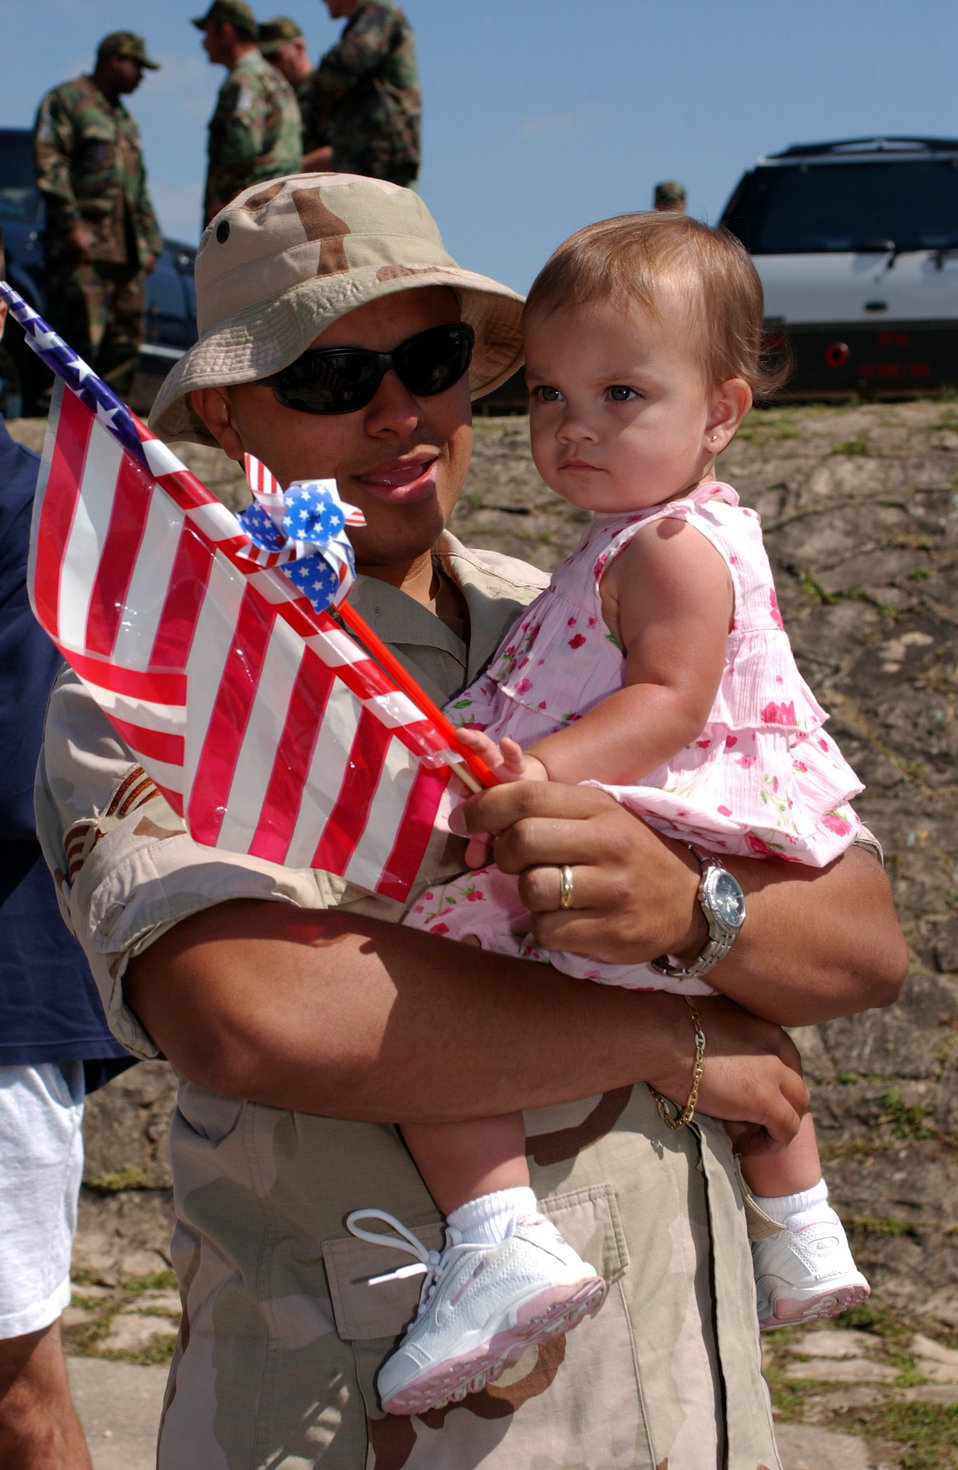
Daddy's home

SPANGDAHLEM AIR BASE, Germany -- Senior Airman Harold Muniz-Ruiz holds his daughter after returning here June 17 from an Operation Iraqi Freedom deployment. Airman Muniz-Ruiz is assigned with the 52nd Civil Engineer Squadron.